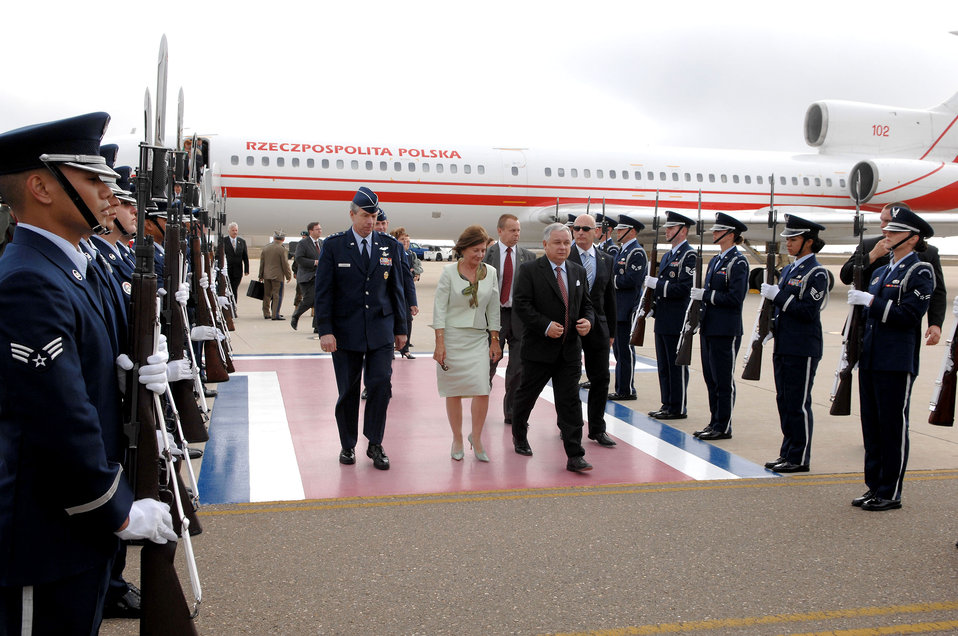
Polish president visits Vandenberg's missile sites

A Vandenberg Air Force Base Honor Guard cordon welcomes Polish President Lech Kaczynski and his wife, Maria, as he is escorted by Lt. Gen. Henry A. Obering III upon their arrival July 17 to Vandenberg AFB, Calif. General Obering is the Missile Defense Agency director. The trip gave the Polish president an opportunity to get an impression of the MDA program and to tour missile defense facilities as the Polish and U.S. governments are negotiating a missile defense system in Poland.